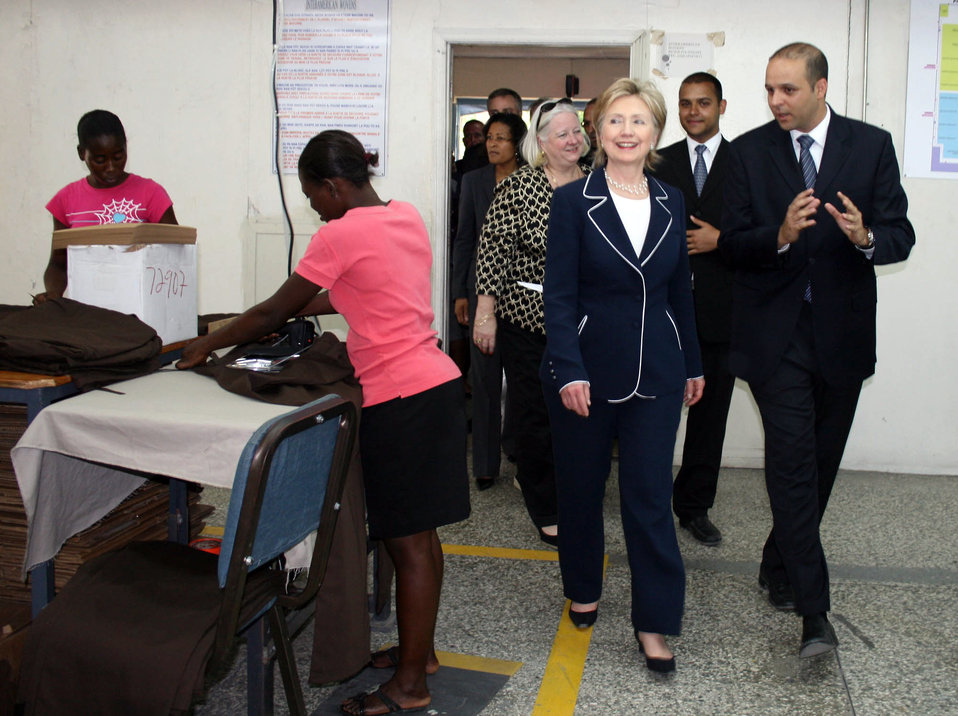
Secretary Clinton Visits Inter-American Woven Factory

U.S. Secretary of State Hillary Rodham Clinton is given a tour by Clifford (to the right beside the Secretary) and Michel Apaid (to the right in the back) at the Inter-American Woven factory in Port-au-Prince, Haiti April 16, 2009. Hope II legislation has created 11,000 jobs in Haiti. Behind Clifford Apaid and the Secretary is U.S. Ambassador to Haiti Janet A. Sanderson.